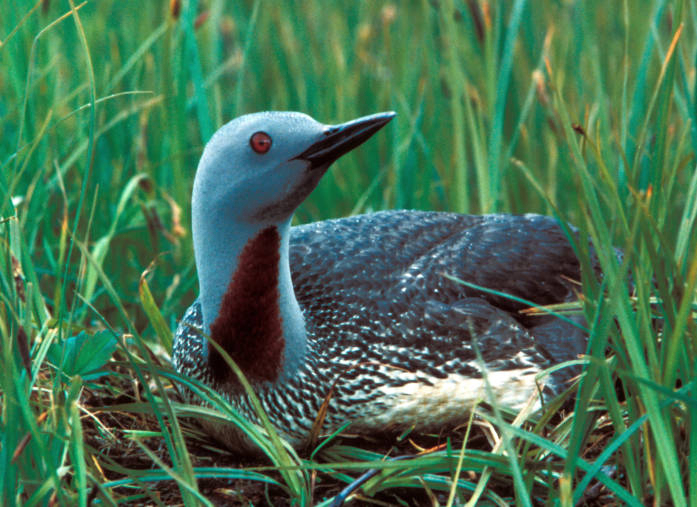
red-throated loon

Alaska Maritime National Wildlife Refuge